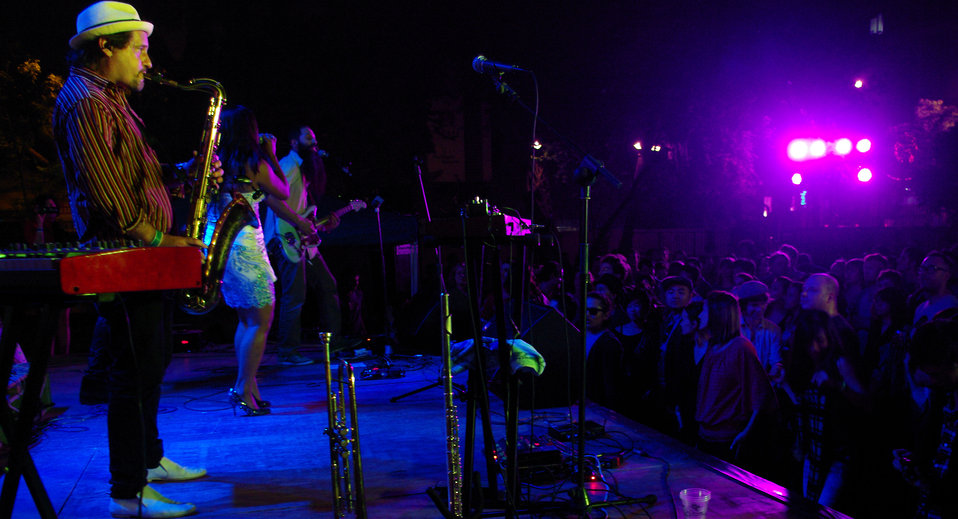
PEPFAR, U.S. Embassy Host Dengue Fever Concert in Hanoi